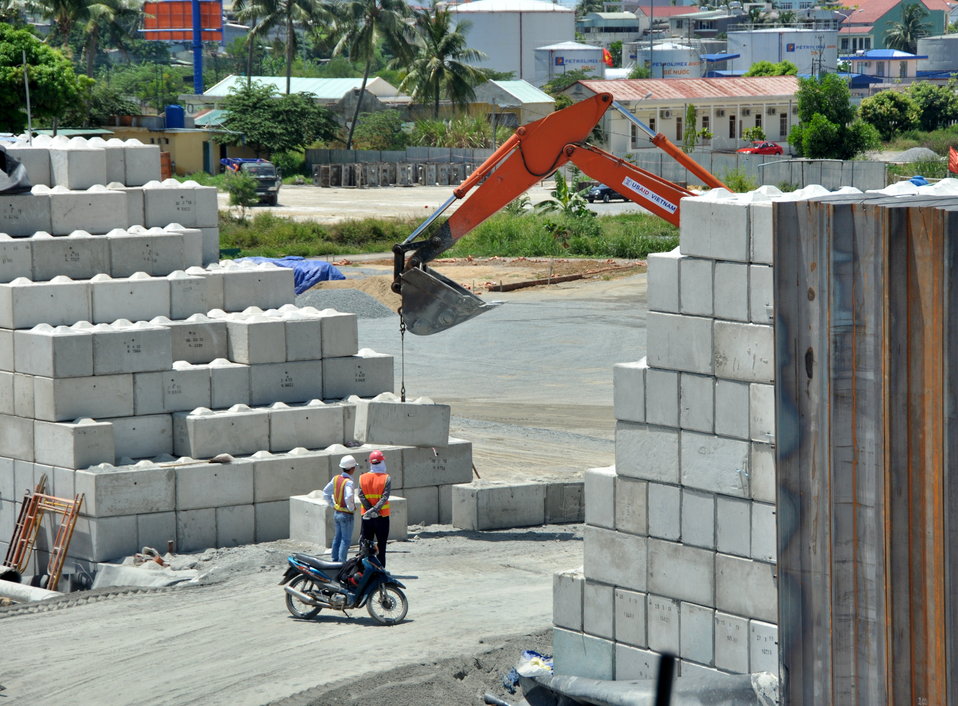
Environmental Remediation Progress at the Danang Airport site

Progress at the Remediation of Dioxin Contamination Project Site

Danang, Vietnam, June 5, 2013